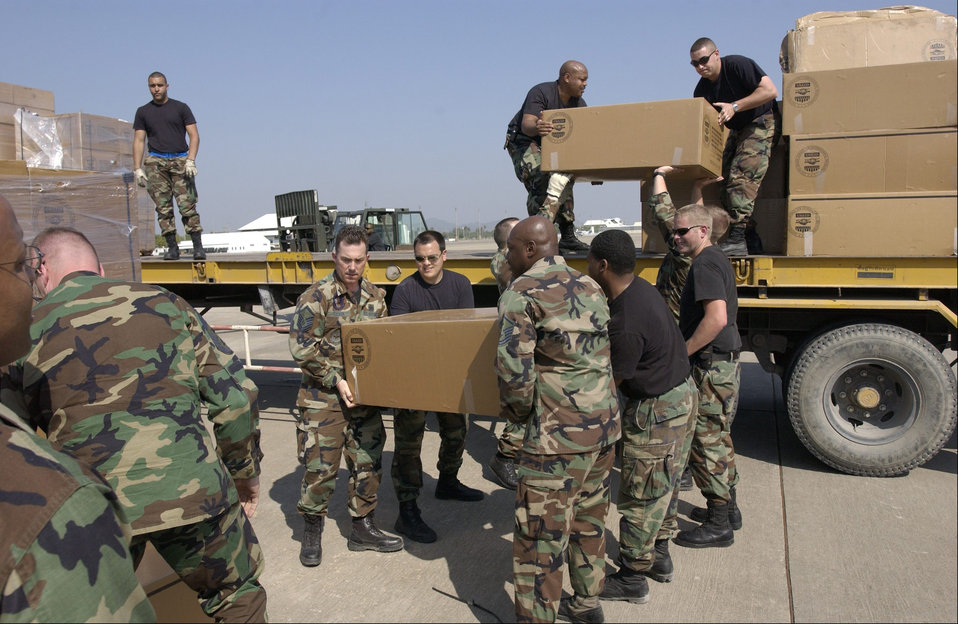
Operation Unified Assistance

UTAPOA, Thailand -- Airmen from the Air Force Tanker Airlift Control Element carry boxes of relief supplies Jan. 9 at the Royal Thai Naval Air Station here. The supplies were provided by the U. S. Agency for International Development. The Airmen are among 12,000 servicemembers deployed to Southeast Asia in support of Operation Unified Assistance, a massive international response to help the victims of the tsunami disaster.